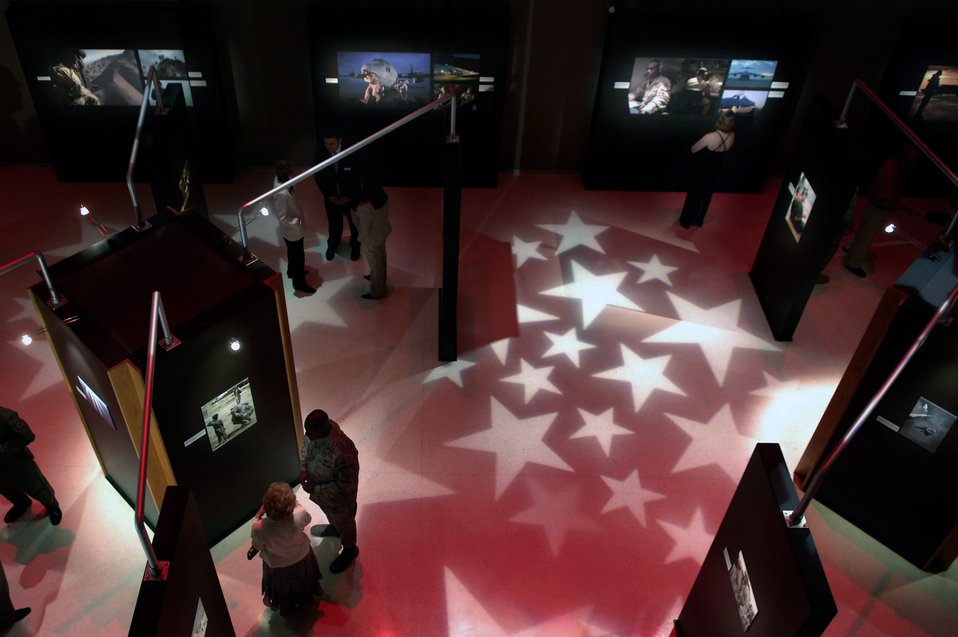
Air Force, military photographers recognized

Patrons study photographs on display at the